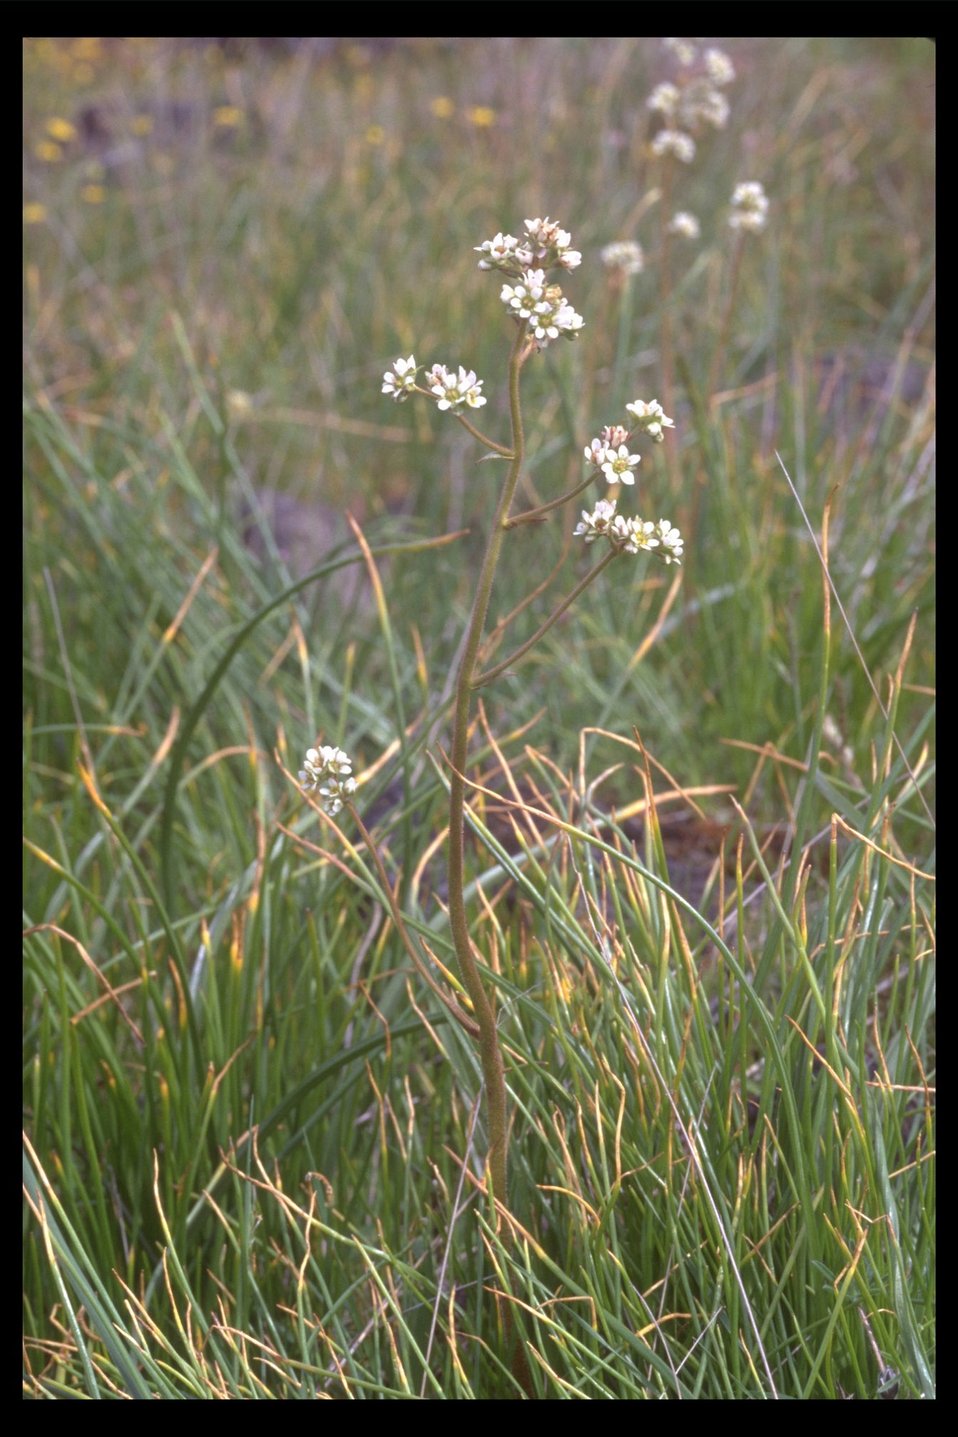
Oregon Saxifrage (Saxifraga oregana) found at Upper Table Rock.